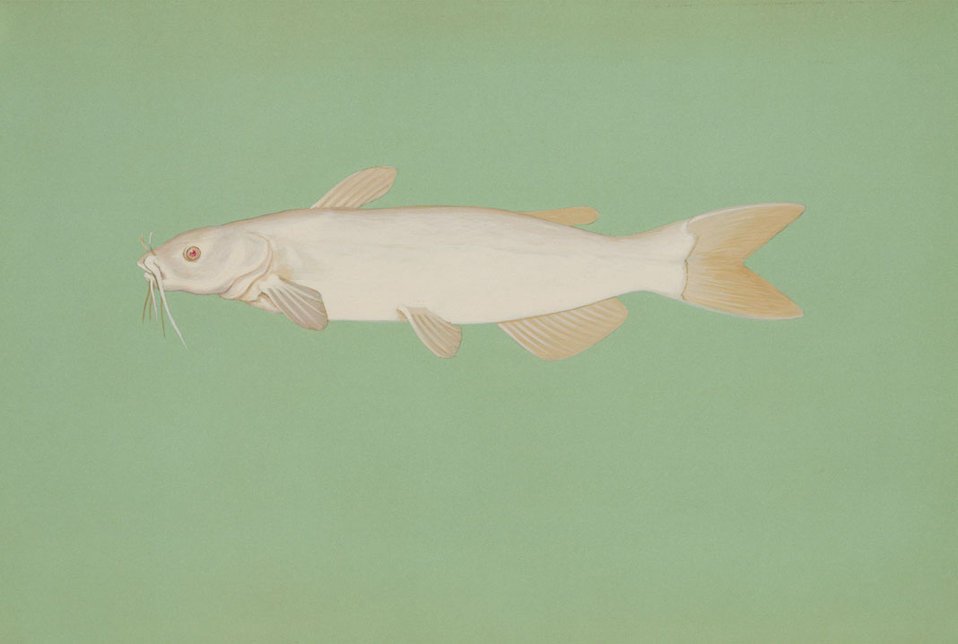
Albino channel catfish

Scans of artwork commissioned by the Fish and Wildlife Service in the 1970's. Original art is kept at DC Booth Fish Hatchery in Spearfish, SD.